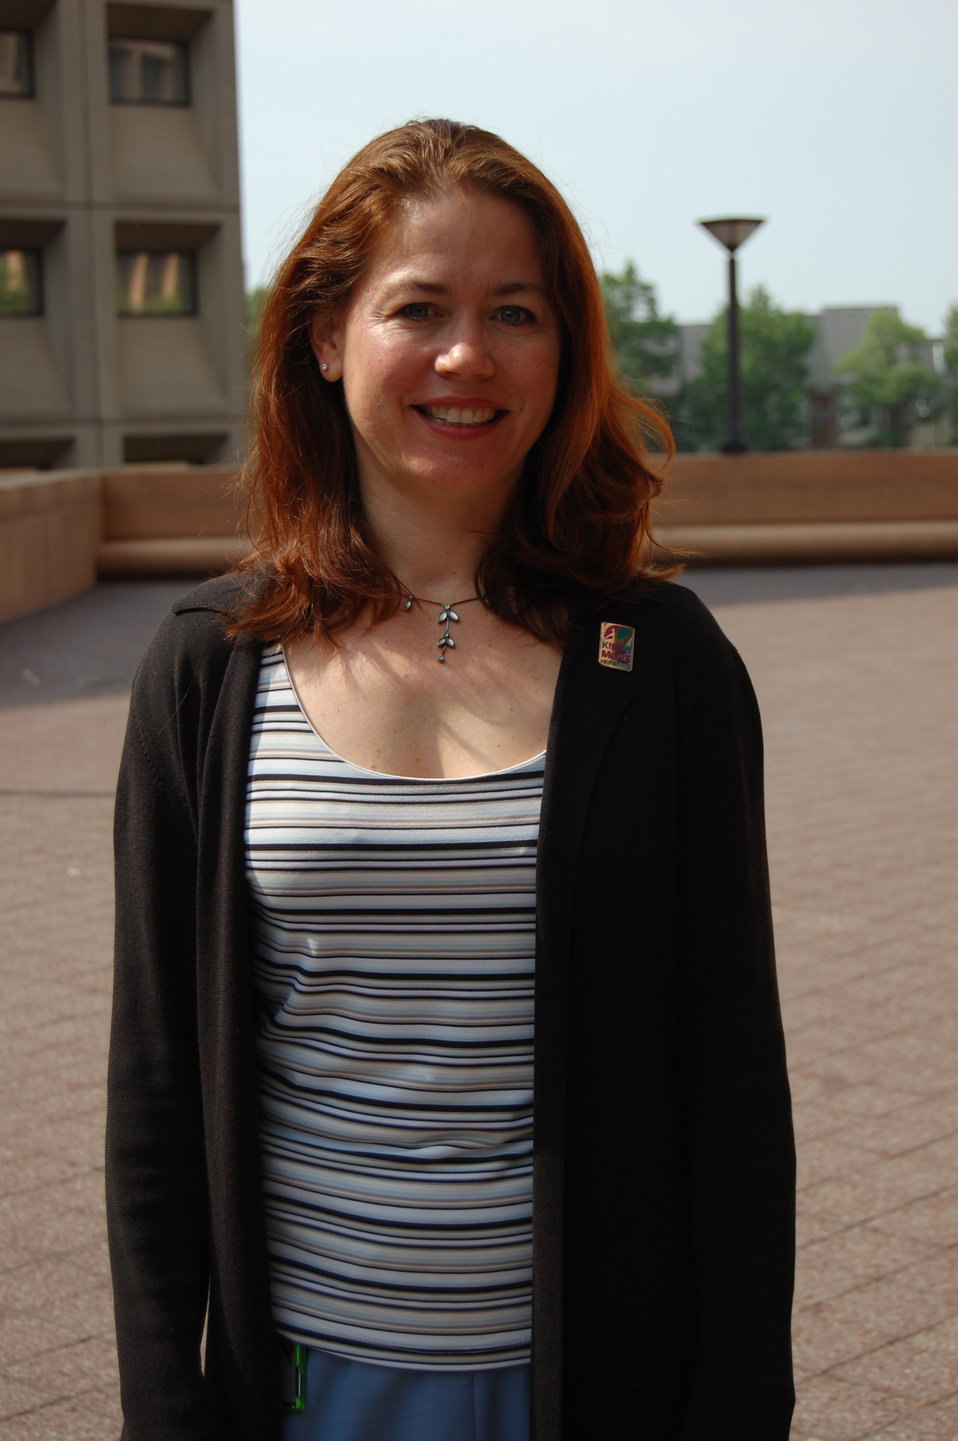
PACHA conf047